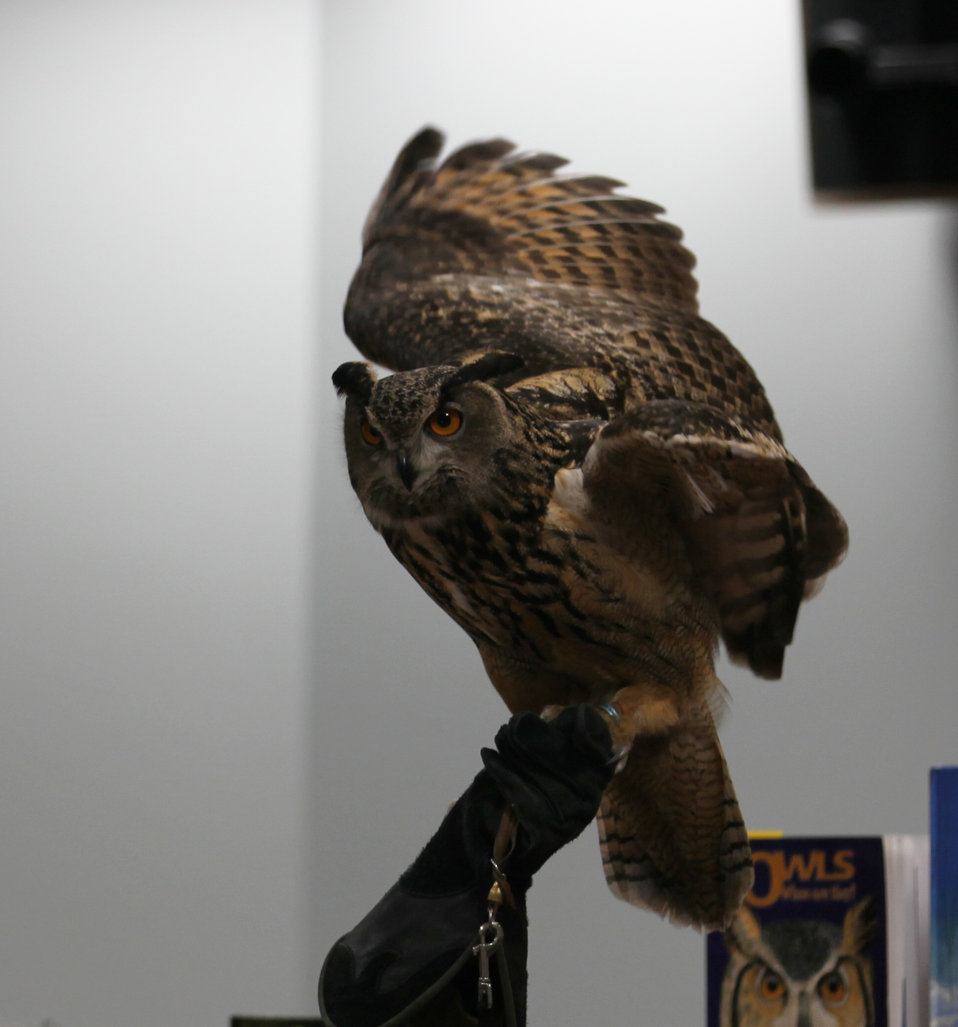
Great Horned Owl at bird show during the fishing derby on May 7th.